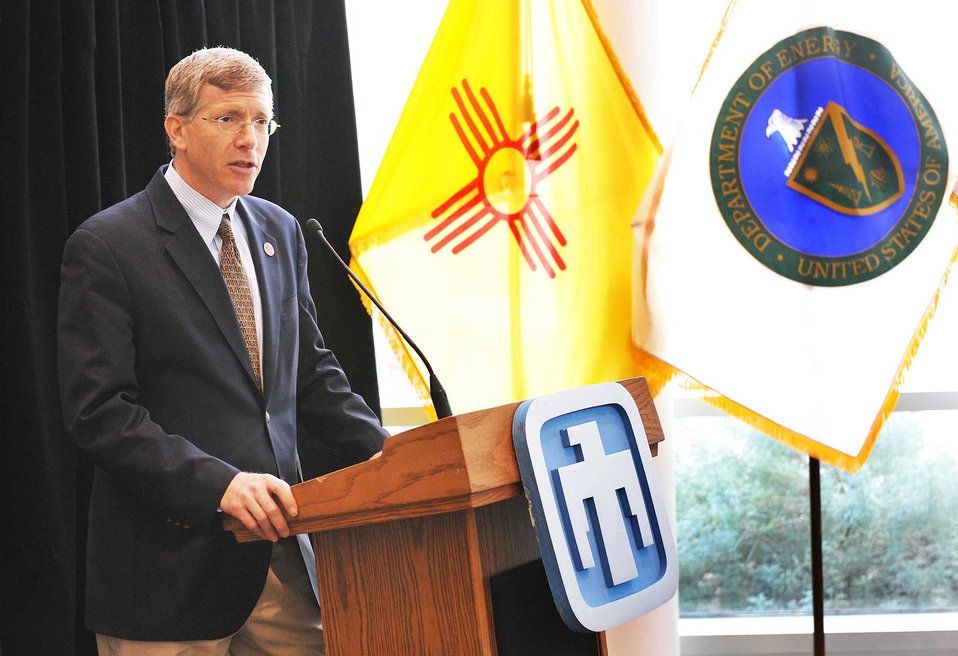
Deputy Secretary Poneman announces $4.2 million to enhance Sandia's Battery Abuse Testing Laboratory as part of the Recovery Act.